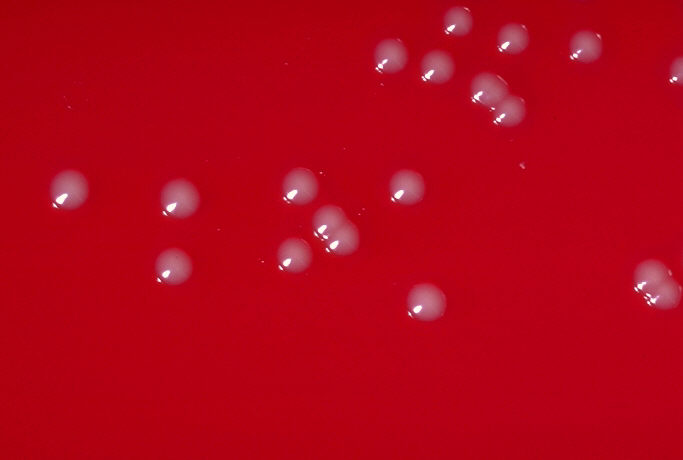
Blood agar plate culture of Corynebacterium diphtheriae mitis.